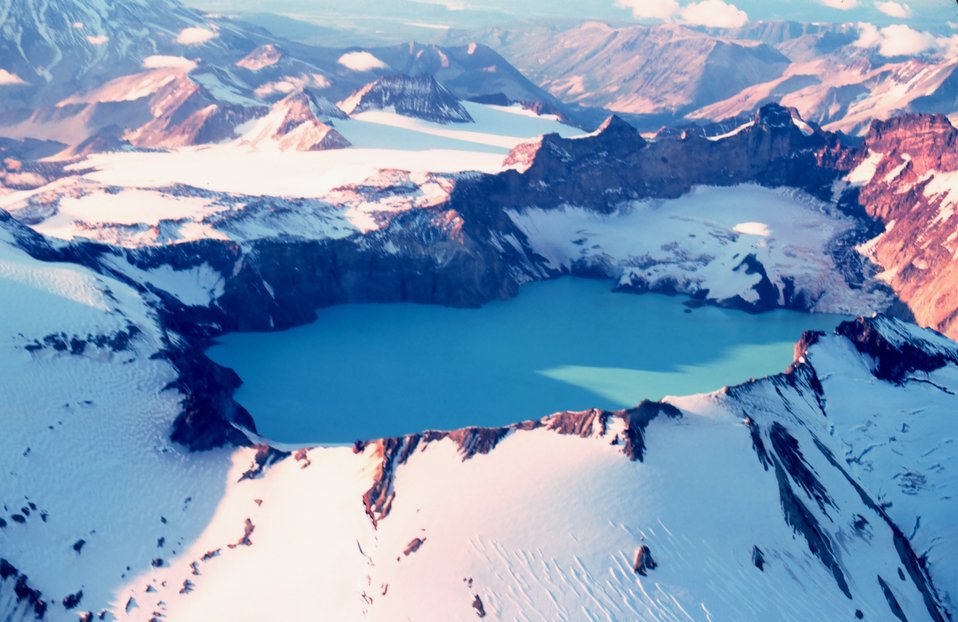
The caldera lake at Katmai volcano